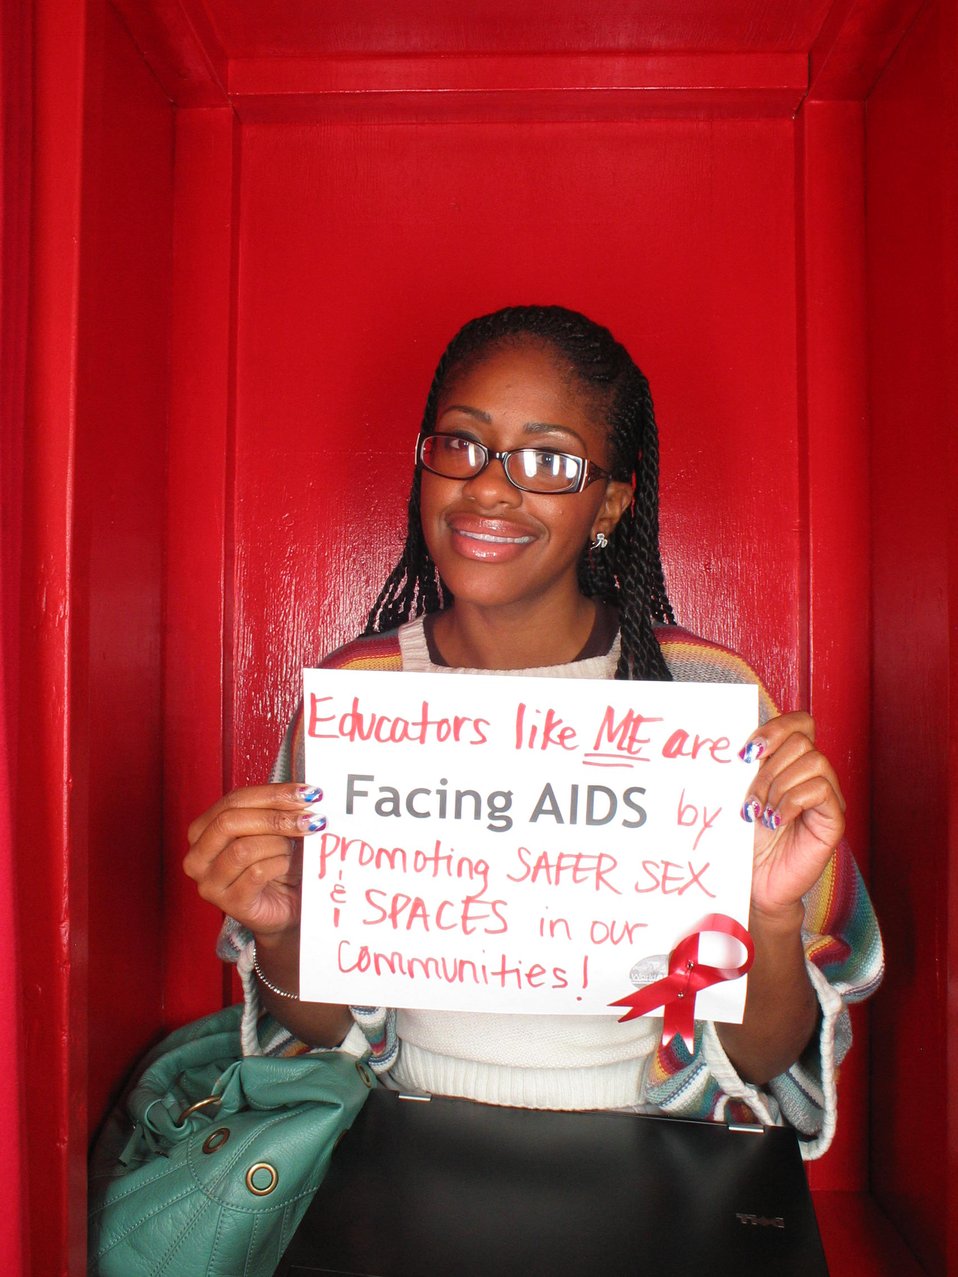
Educators like me are Facing AIDS by promoting SAFER SEX and SPACES in our communities!